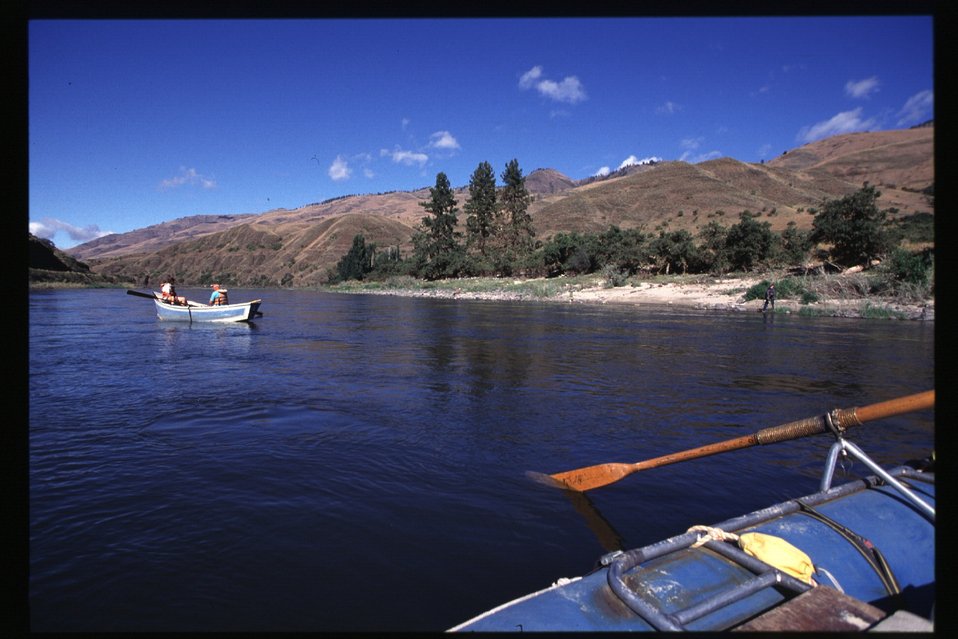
Hammer Creek put-in Dory Lower Salmon River Cottonwood Field Office UCSC Upper Columbia Salmon Clearwater District